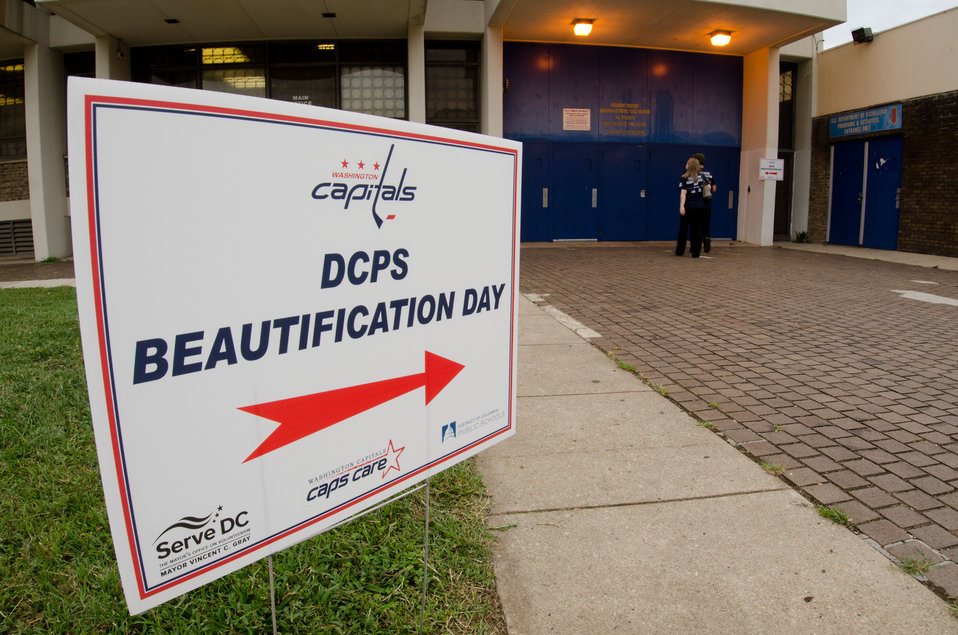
Volunteers from the U.S. Department of Agriculture (USDA) People’s Garden Executive Master Gardeners, friends, and family, Washington Capitals fans arrive at Thurgood Marshall Elementary School in Washington D.C. on Saturday, August 25, 2012 to help out on District of Columbia Public Schools’ (DCPS) Beautification Day. Each year people are invited to help “spruce up” public school facilities in preparation for the first day of school. More than 70 volunteers pitched in at this large school facility. The People’s Garden effort involves building and painting raised planter boxes, then preparing the soil mixture so they are “ready to grow.” Additionally, a team that includes descendants of U.S. Supreme Court Justice Thurgood Marshall assembles a prefabricated garden toolshed. The Justice’s son, John Marshall leads the team, which includes Brianna the Justice’s great-grand daughter in one of many multi-generational efforts at this school today. Washington Capitals Forward Mike Riberio, his family and mascot Slapshot participated in every project underway at Marshall School. From the outside gardens, to inside murals, and robotics worktable construction, the teams made their goals.